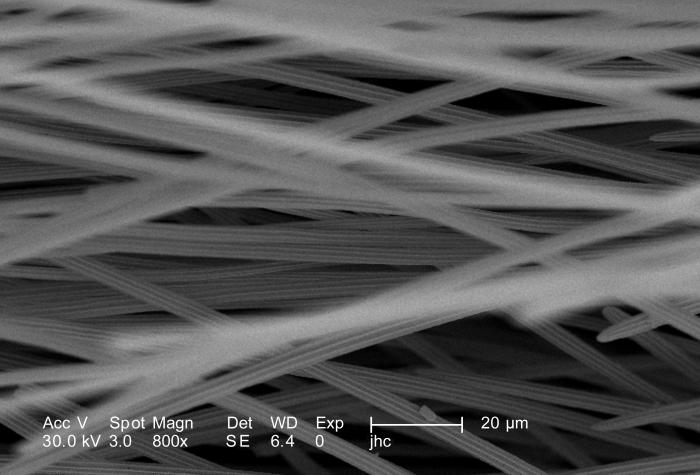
Under a high magnification of 800X, this scanning electron micrograph (SEM) revealed some of the ultrastructural exoskeletal morphology displayed by an unidentified white moth, which had been found deceased on the ground in the suburbs of Decatur, Georgia. In this particular view, what appeared to be striated 'hairs', was actually numbers of exoskeletal sensorial structures known as 'setae', which were located atop the insect's head.